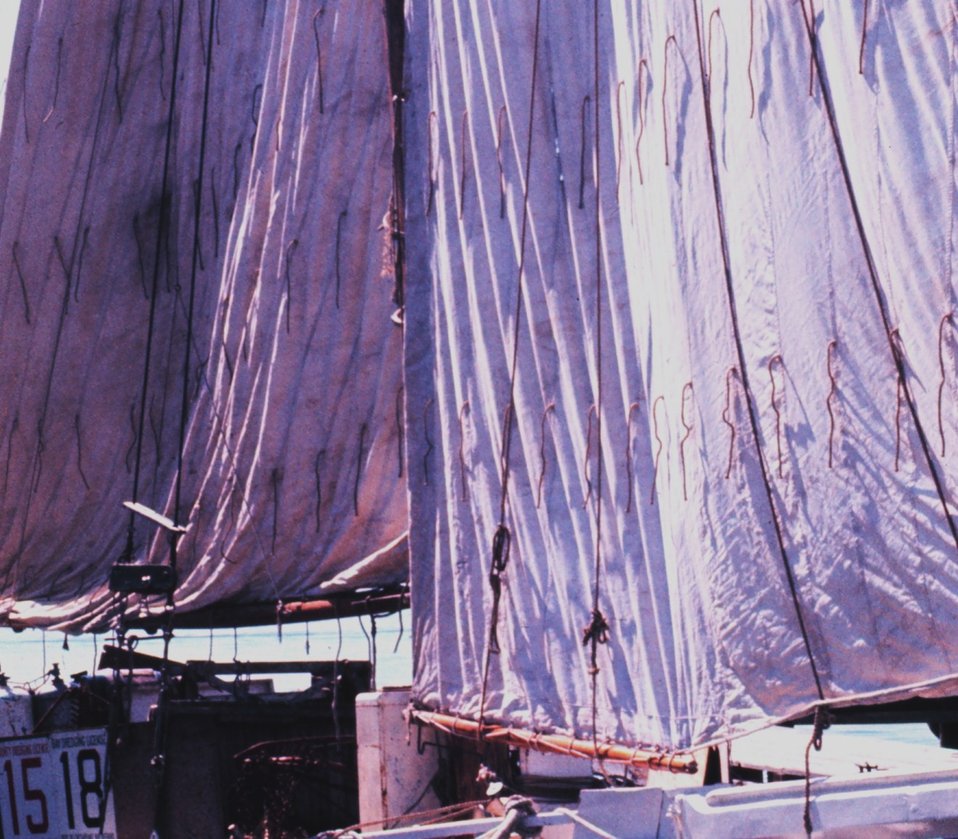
Sailing oyster dredgers drying their sails alongside the dock.